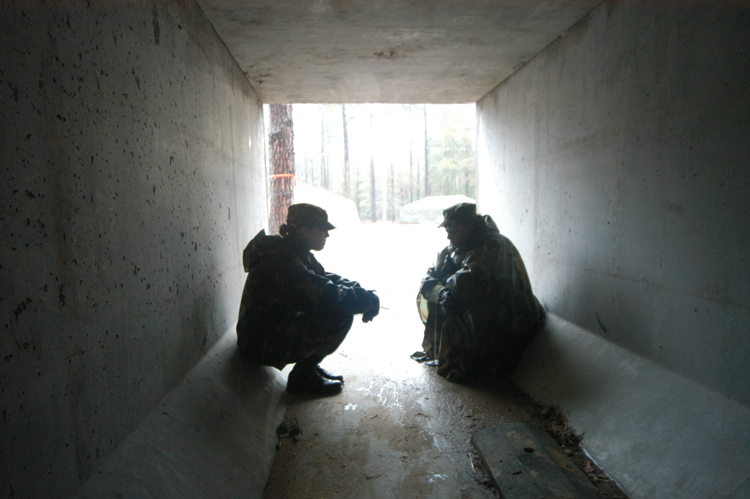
Practice makes perfect

ROBINS AIR FORCE BASE, Ga. -- Two Airmen crouch in a concrete shelter during a local field training exercise here recently. The exercise measures the overall effectiveness of servicemembers to perform technical and survival skills in combat environments.